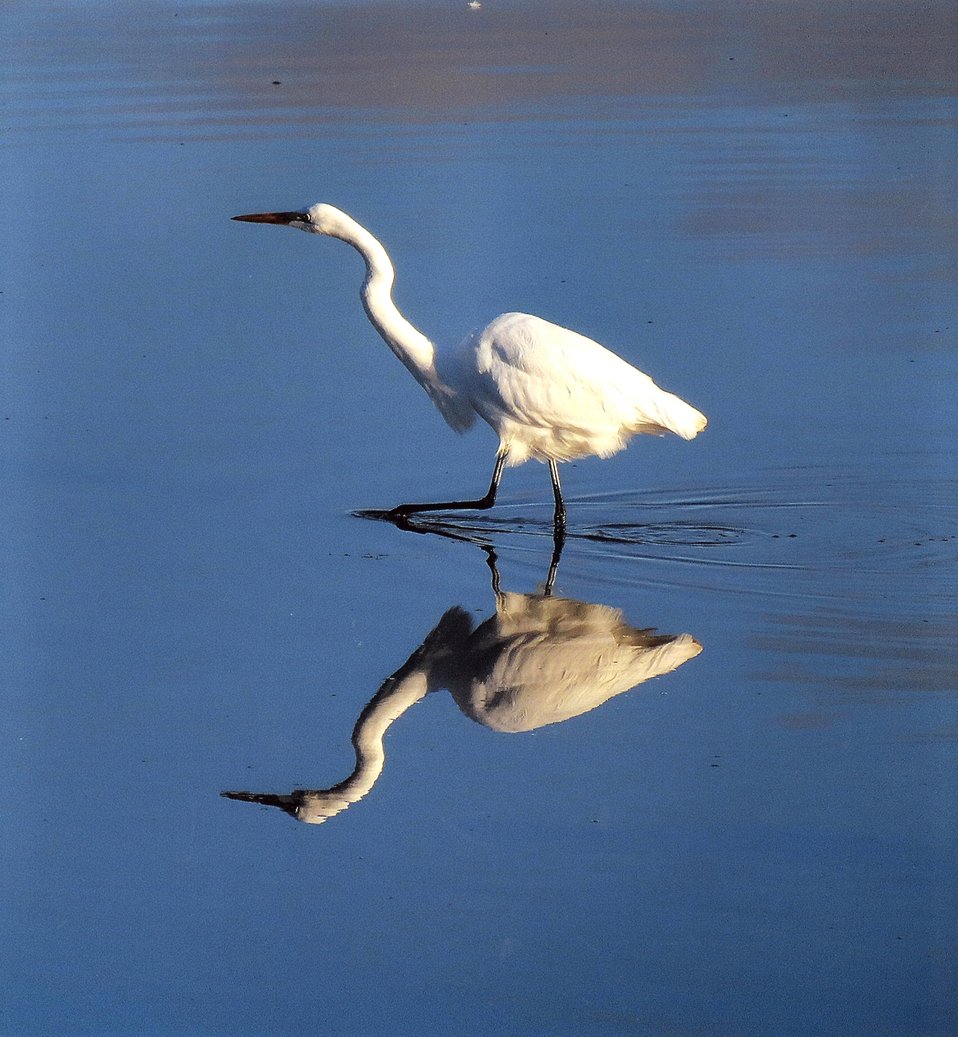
Reflections of Summer

Photo by Rebecca Kelly/USFWS.

Shiawassee National Wildlife Refuge 2013 Photo Contest